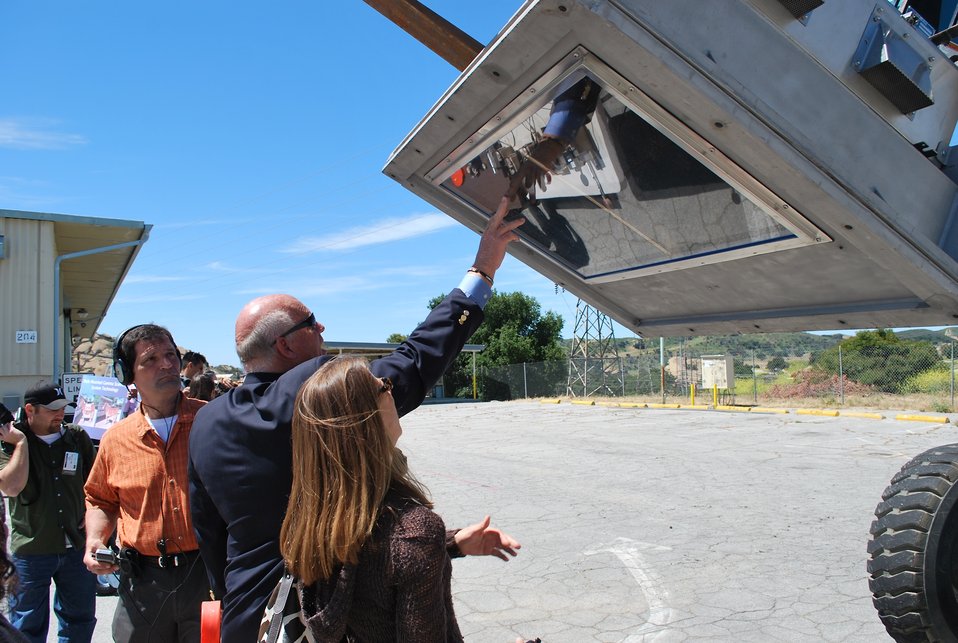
Santa Susana Field Laboratory (SSFL) Field Office Opening Ceremony

Environmental Protection Agency (EPA) Senior Technical Advisor for the ARRA-funded Radiological Characterization Study, Gregg Dempsey, second from left, demonstrates the fork-lift mounted gamma-scanning equipment during the opening ceremony for the EPA Santa Susana Field Laboratory Field Office.